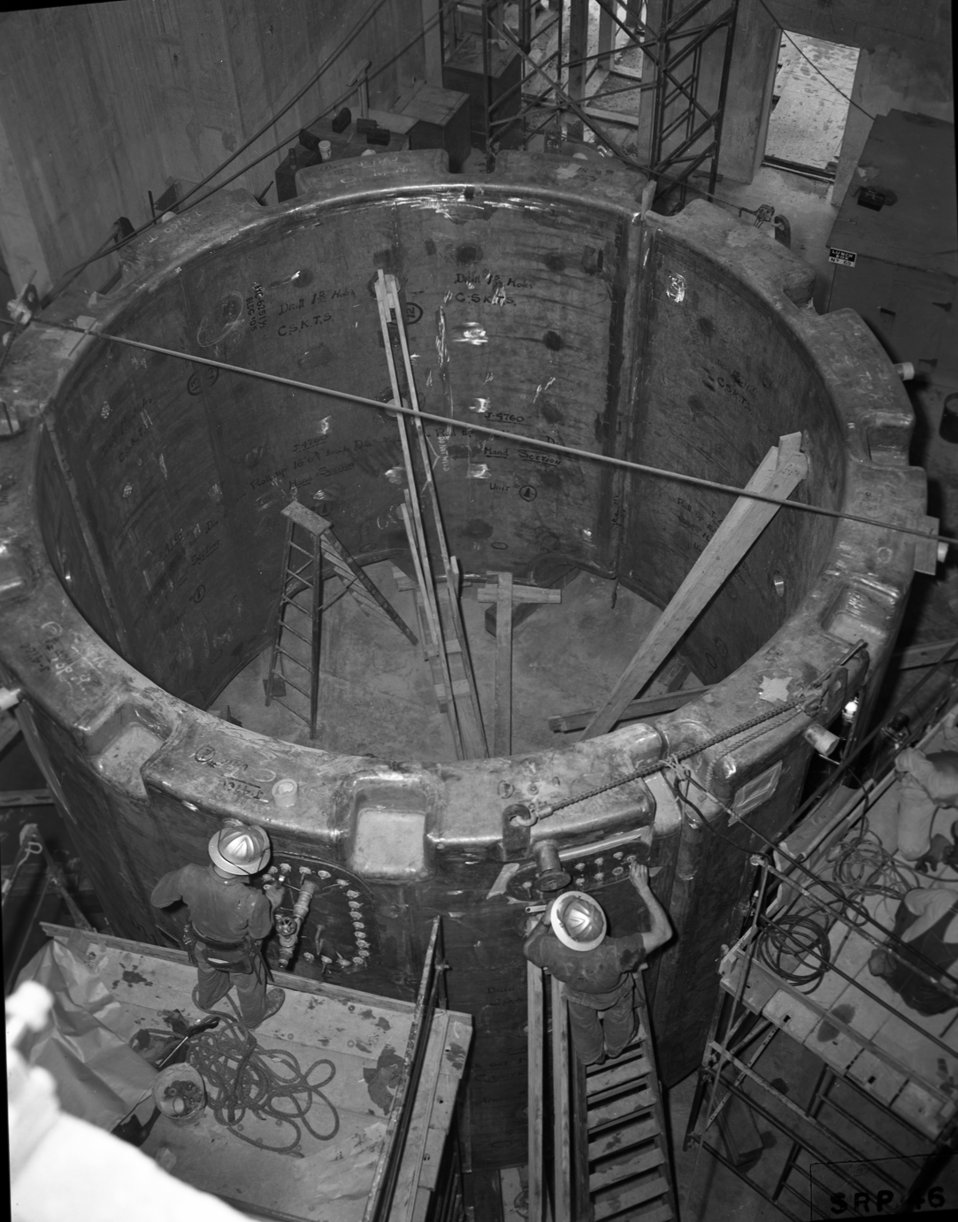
Historic P and R Reactor Photos - Savannah River Site

These photos from the 1950s show the construction of Savannah River Site’s P and R Reactors, as well as activities at the reactors once they became operational that decade. Each of the reactors, which formerly produced nuclear materials, occupies more than 300,000 square feet of space.